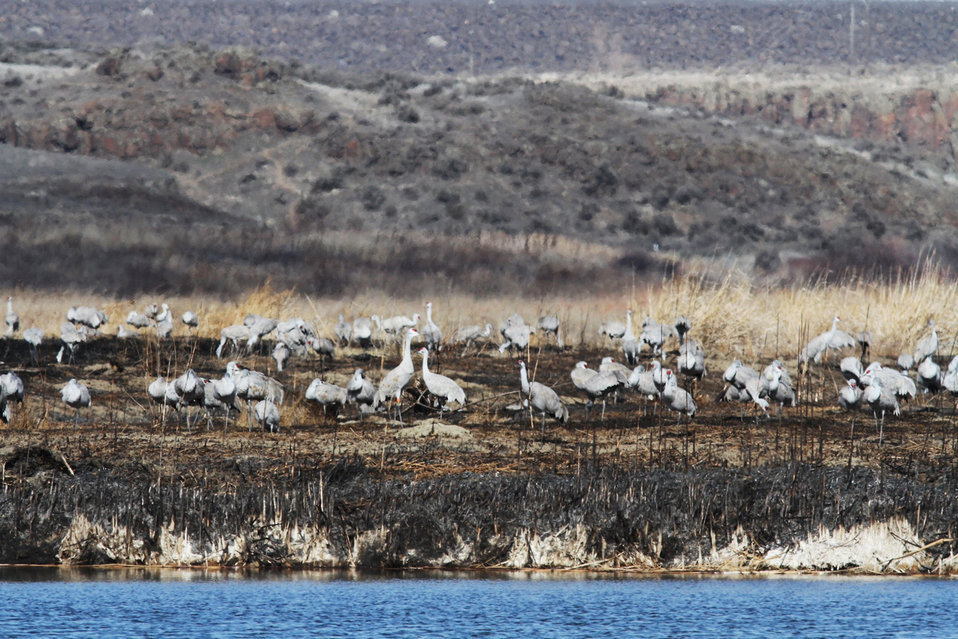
Fire and Cranes

The prescribed fire was conducted on Marsh Unit I of Columbia Refuge to promote lesser sandhill crane use. Large numbers of lesser sandhill cranes visit the refuge during spring and fall migrations. This photograph was snapped of the burn site a few days after the prescribed fire had been completed. While monitoring the burn site, the Refuge Wildlife Biologist noted, ‘Approximately 48 lesser sandhill cranes came in and immediately landed on the burn site just after 11:00 AM. I counted 200 cranes after a half hour. Several were lying down, suggesting to me that they liked the warm black substrate.’